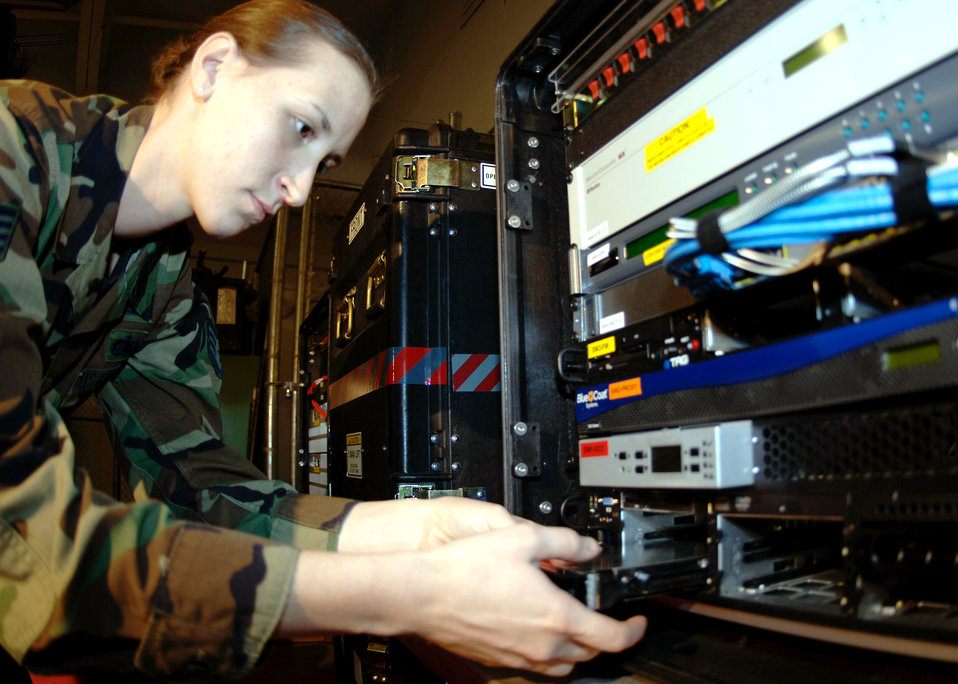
Setting up

DAVIS-MONTHAN AIR FORCE BASE, Ariz. (AFPN) -- Staff Sgt. Alicia Coman installs one of six hard drives for the theater deployable communications NCC-D heavy package exchange server. Sergeant Coman is with the 355th Communications Squadron.